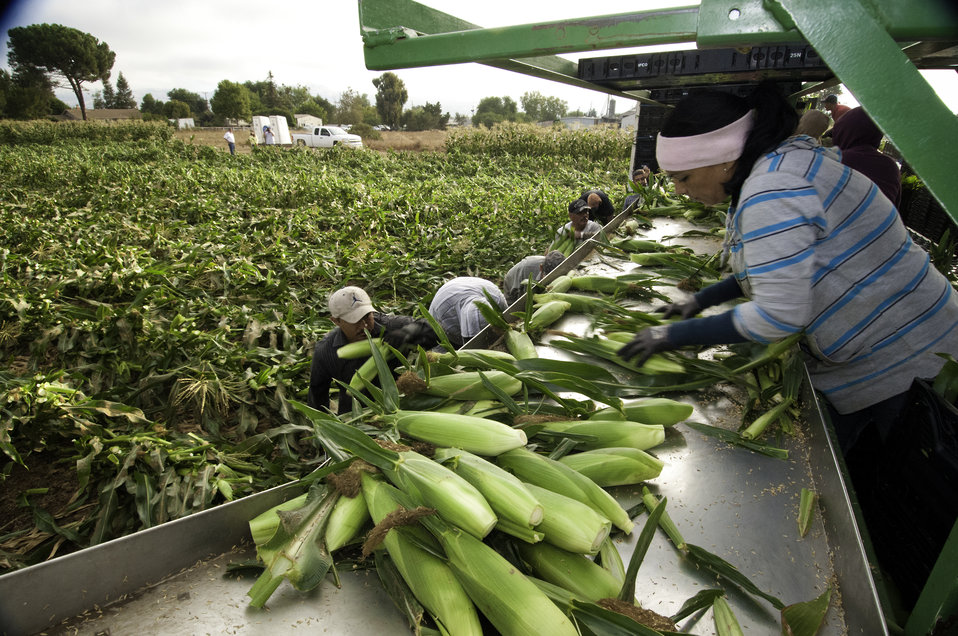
Migrant workers harvest corn on Uesugi Farms in Gilroy, CA on Wednesday, Aug. 28, 2013.